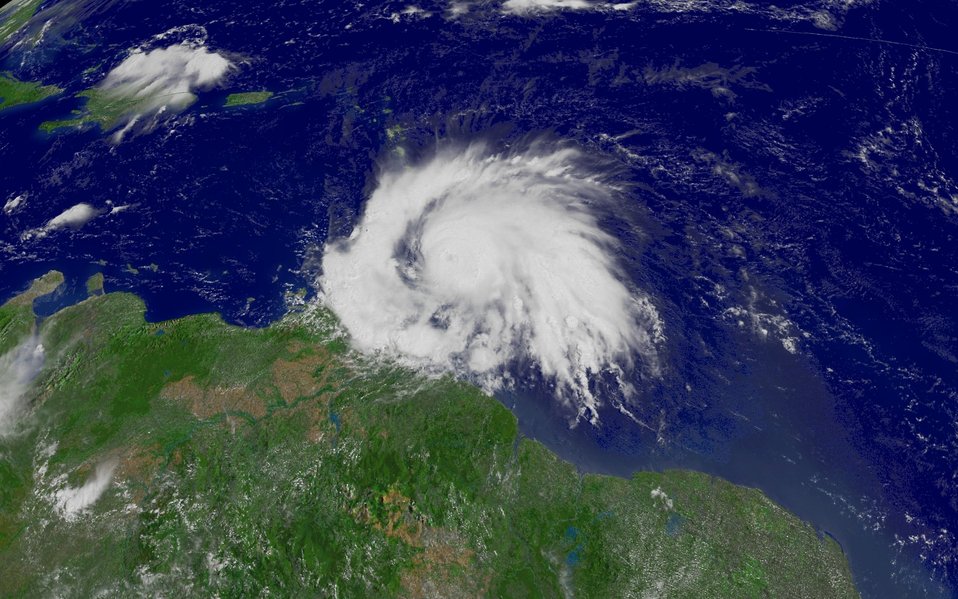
Hurricane Ivan approaching the Antilles from the western Atlantic Ocean.